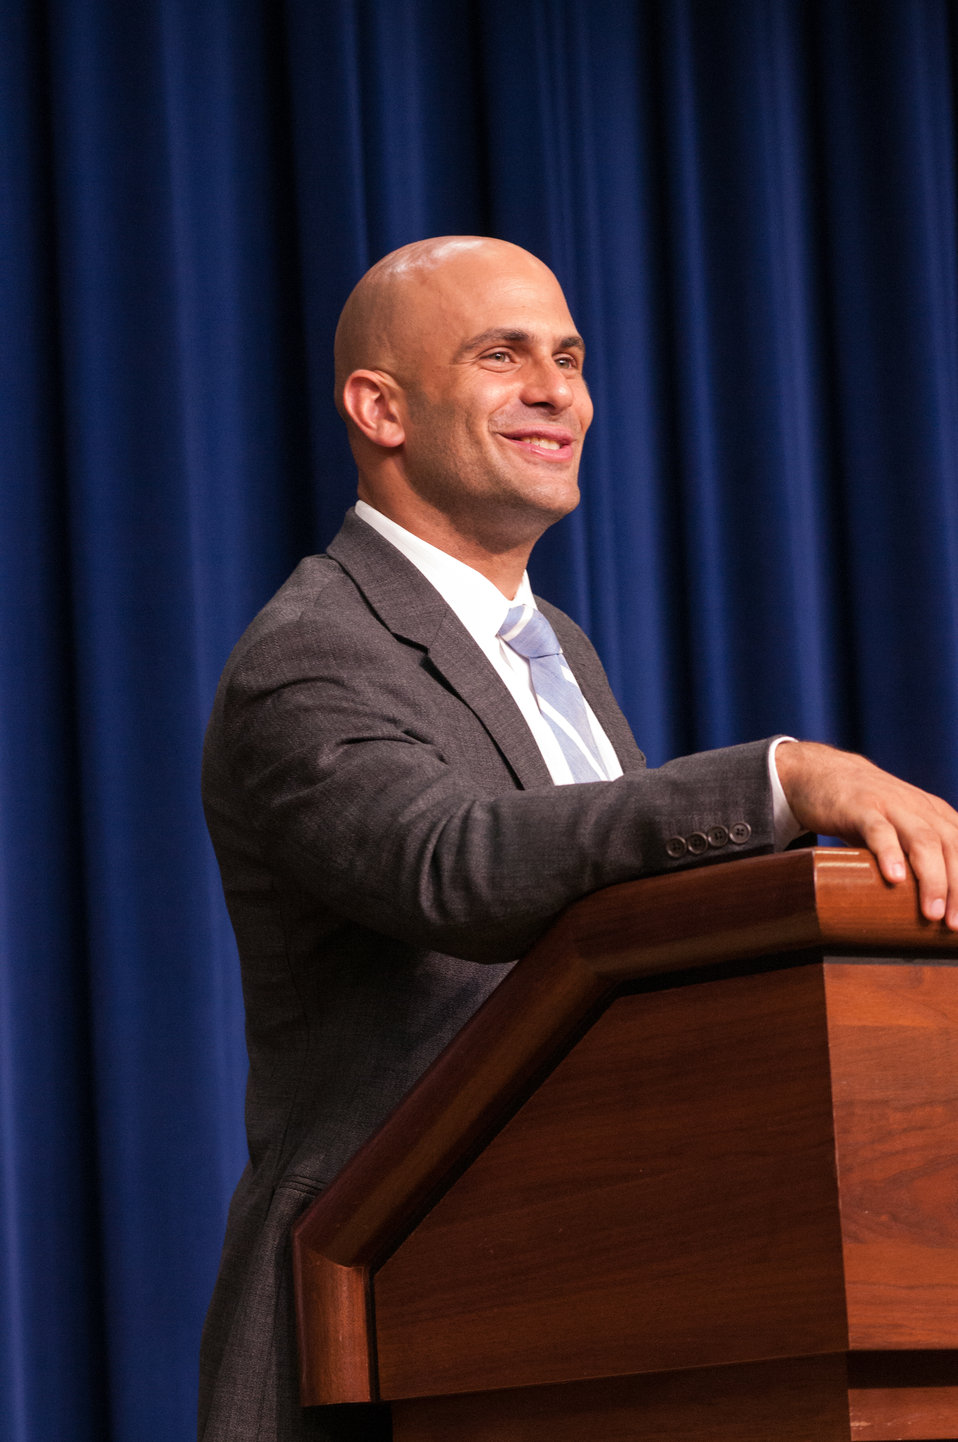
White House Chef Sam Kass speaks at a meeting of the White House Rural Council to an audience of the National State President’s Conference of the FFA on Wednesday, Jul. 24, 2013 in Washington, D.C. Chef Kass discussed nutrition and agriculture topics.